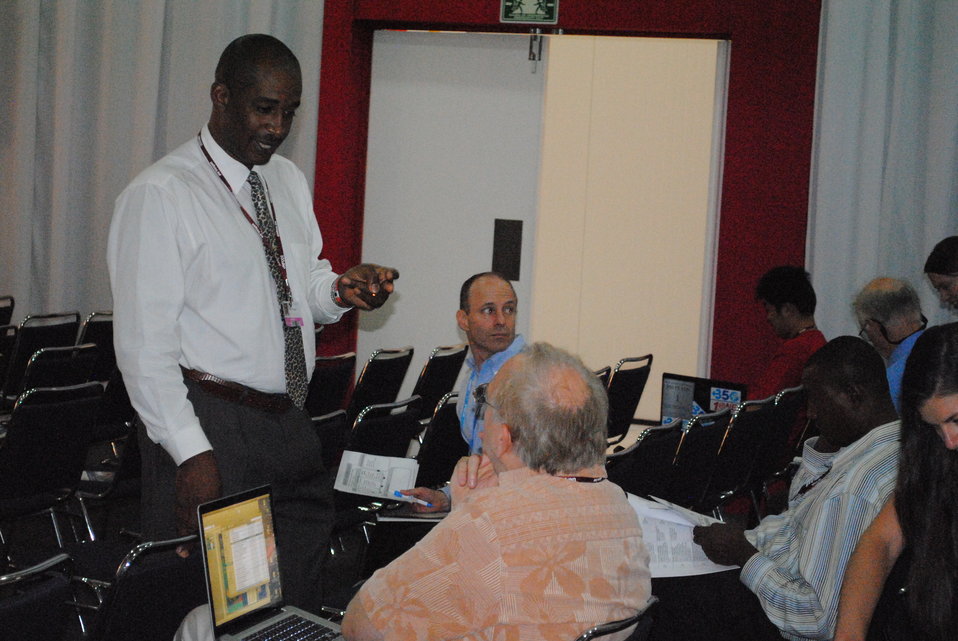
St. Lucia Officer D'Avergene Speaks With Members of the Audience

Crispin D'Avergene, Chief Sustainable Officer of the St. Lucia Ministry of Physical Development and Environment speaks with members of the audience at the side event, 'Stakeholder Driven Approach to Adaptation -- East Caribbean,' at the U.S. Center at COP-16 in Cancun, Mexico, on November 30, 2010.